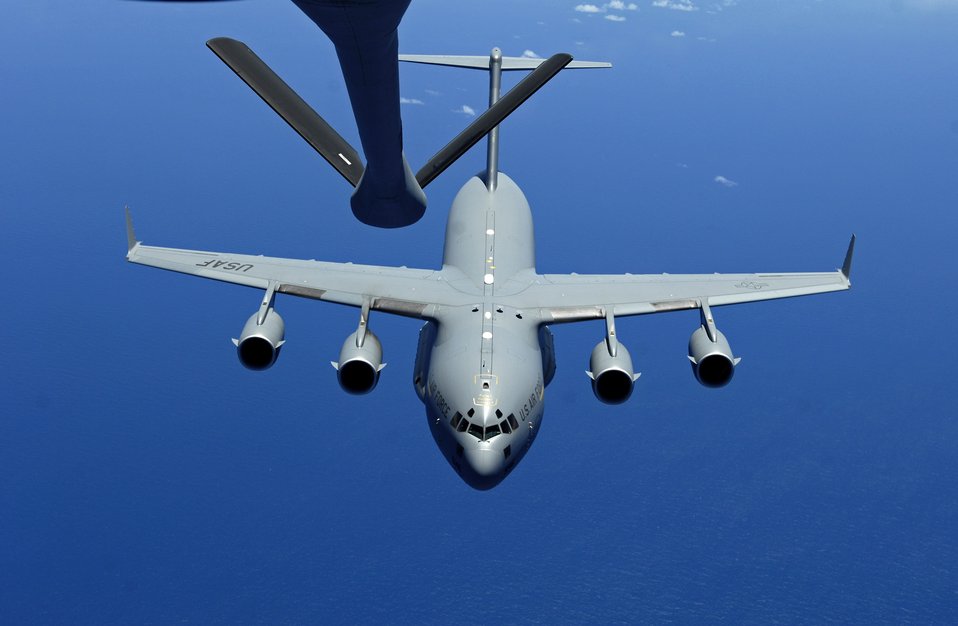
KC-135, C-17 crews rendezvous for refuel readiness

A C-17 Globemaster III approaches the boom of a KC-135 Stratotanker June 18 during aerial refueling practice. A KC-135 Stratotanker from the 909th Air Refueling Squadron, at Kadena Air Base, Japan is at Hickam Air Force Base, Hawaii, practicing with a C-17 Globemaster III from the 535th Airlift Squadron for the Air Mobility Command Rodeo.